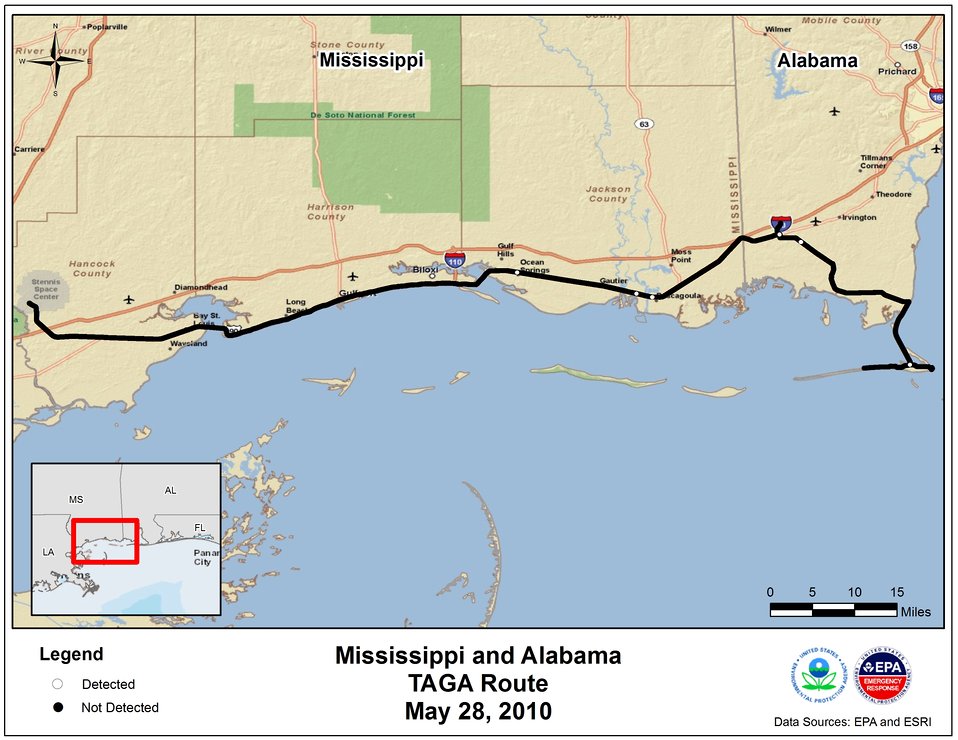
EPA TAGA Air Monitoring Locations May 28, 2010